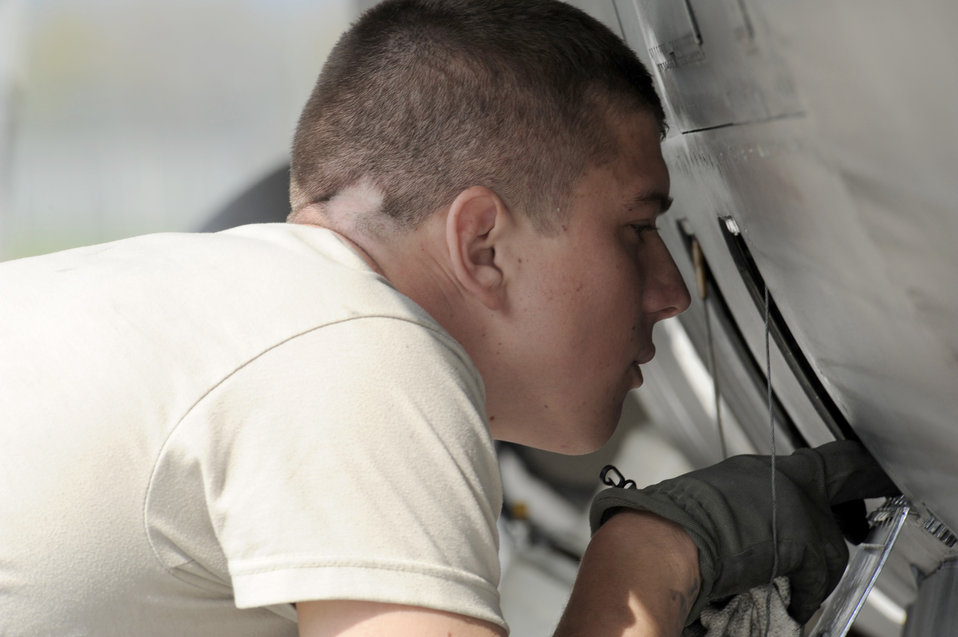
Operation Unified Protector

Airman Andrey Vasilchuk inspects an F-16 Fighting Falcon for flight damage March 31, 2011 at Aviano Air Base, Italy in support of Operation Odyssey Dawn. Airman Vasilchuk is assigned to the 52nd Aircraft Maintenance Squadron.